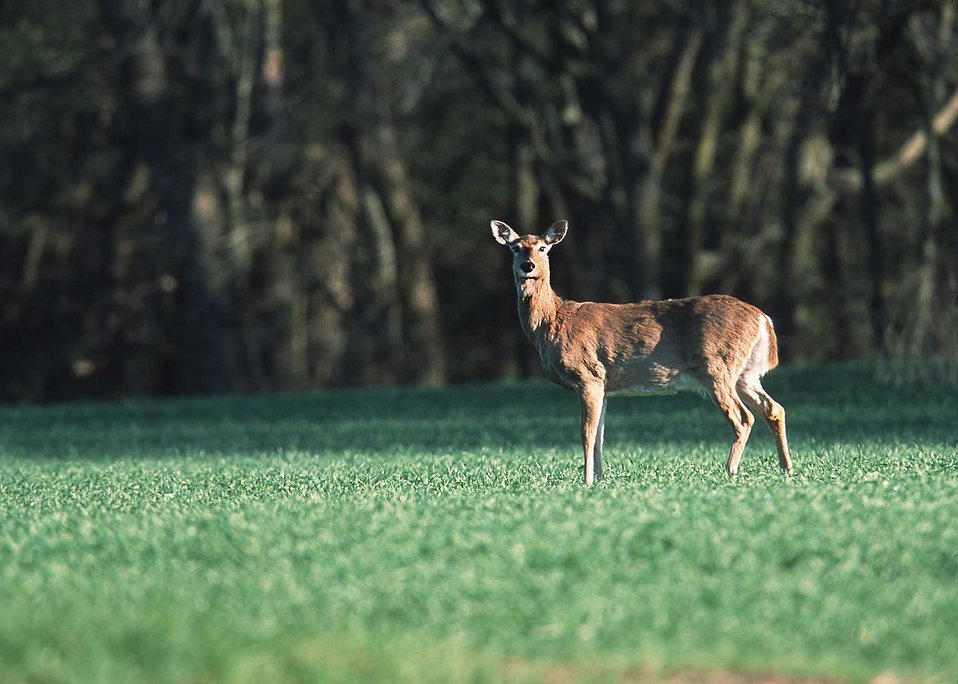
White-tailed deer in farm field. Manhattan, Kansas.